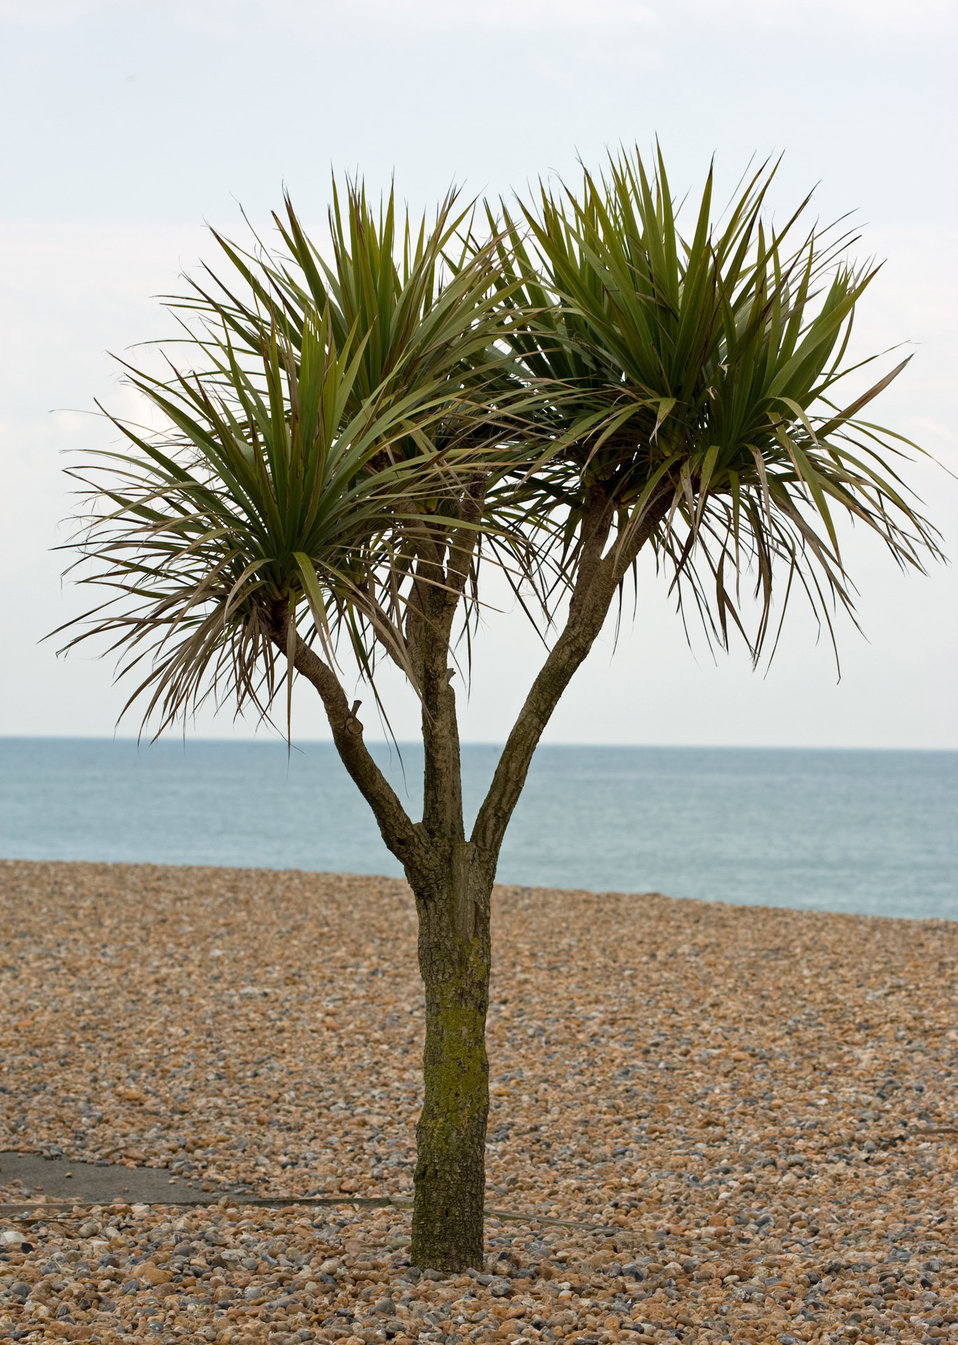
Palm tree on the beach image.